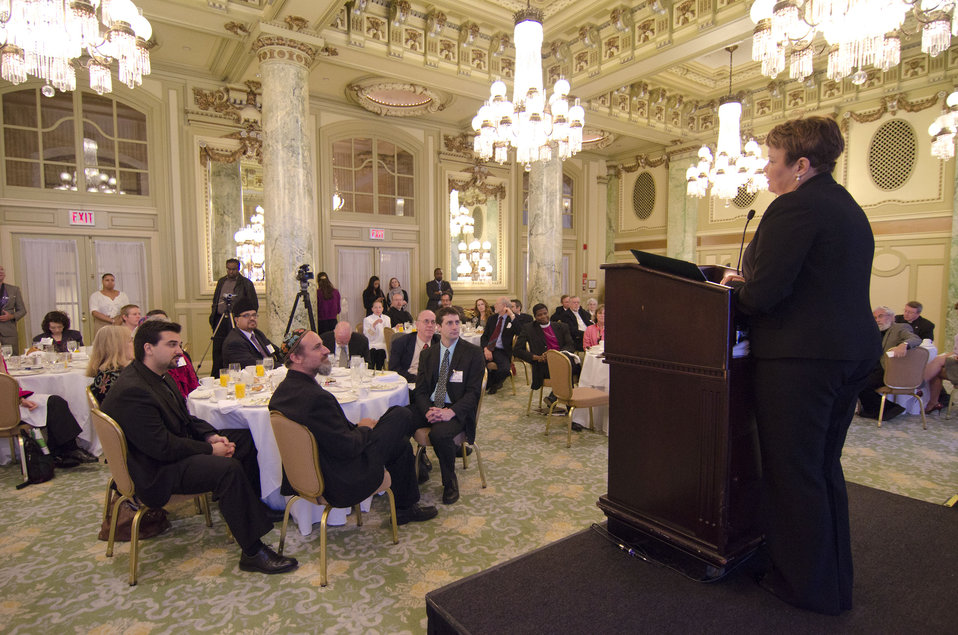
2011-05-05 NRCCCPrayerBreakfast 064

US EPA Administrator Lisa P. Jackson addresses the guests after accepting the Steward of God's Creation Award from the National Religious Coalition on Creation Care.